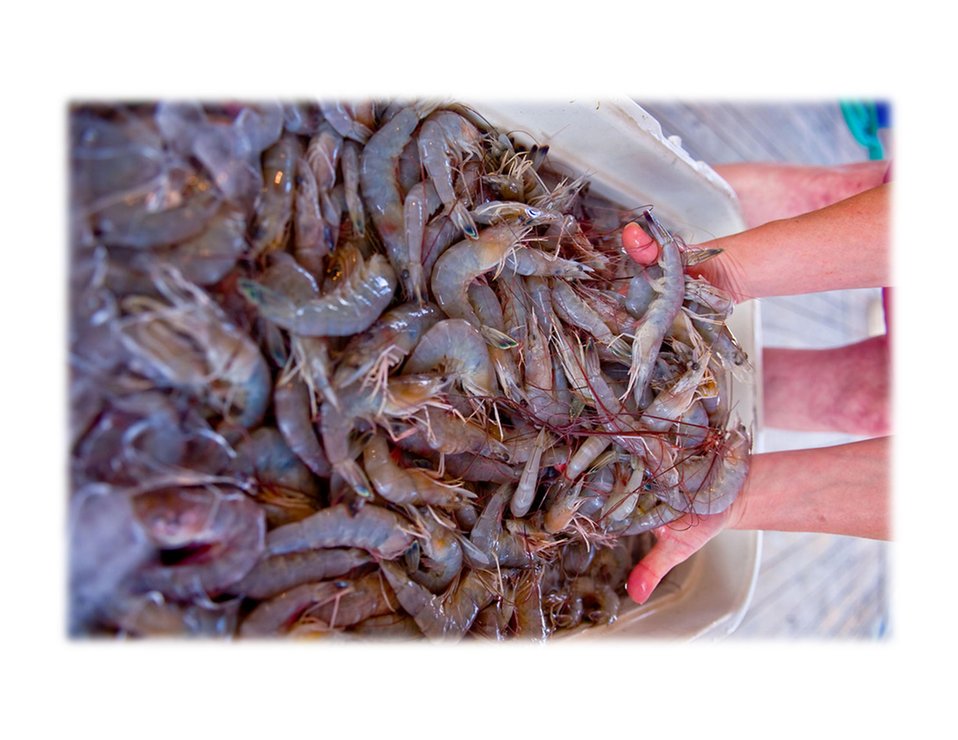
Shrimp harvest, Louisiana